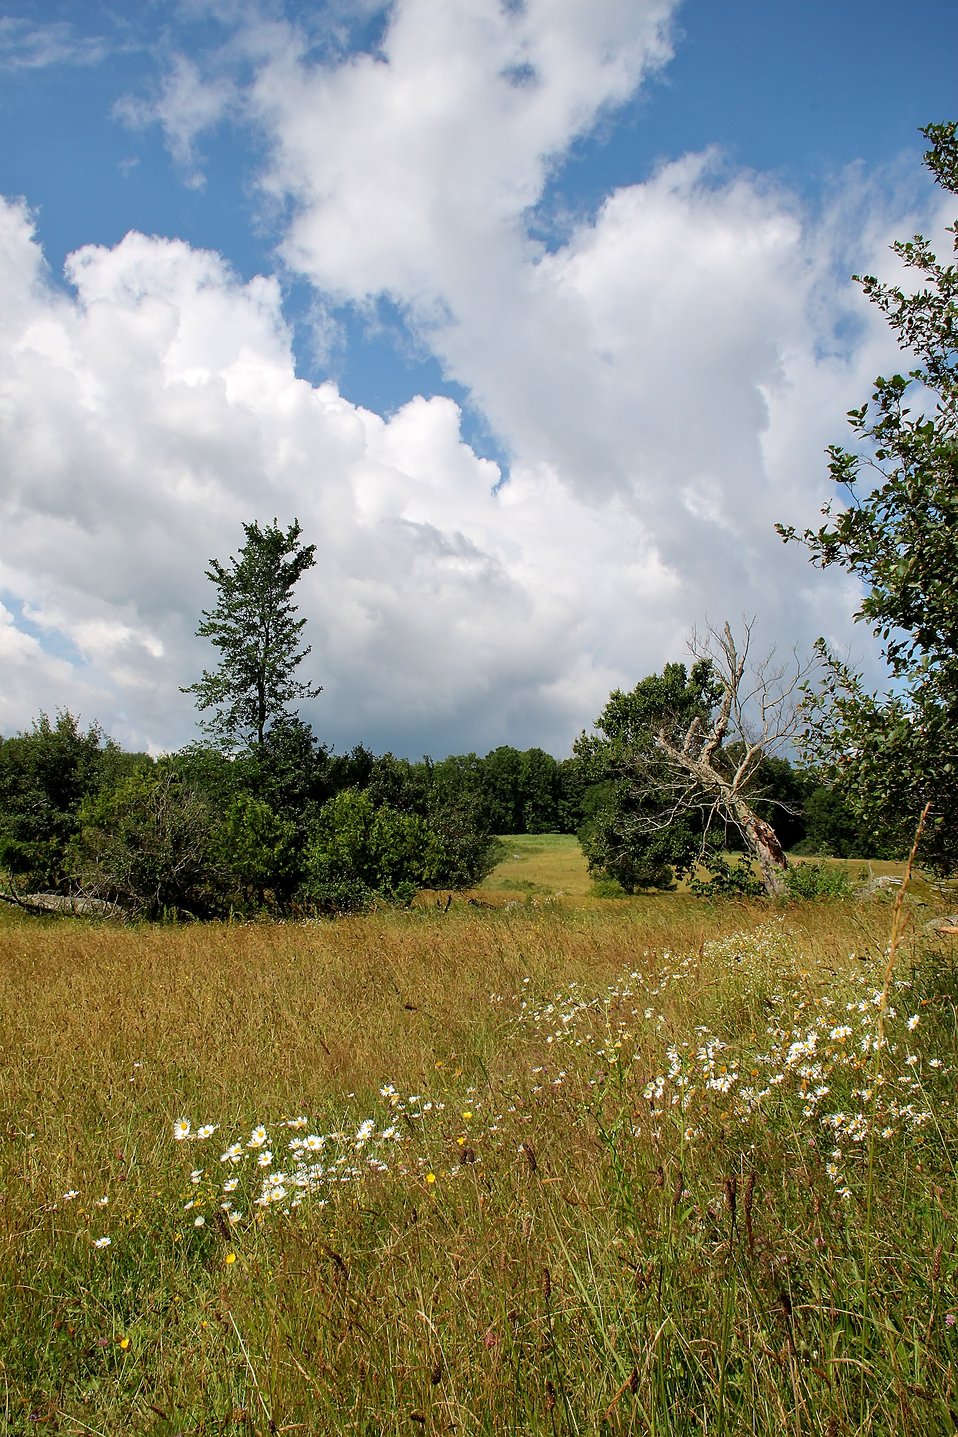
Eagle Point Unit (5)

Missisquoi NWR Eagle Point Unit